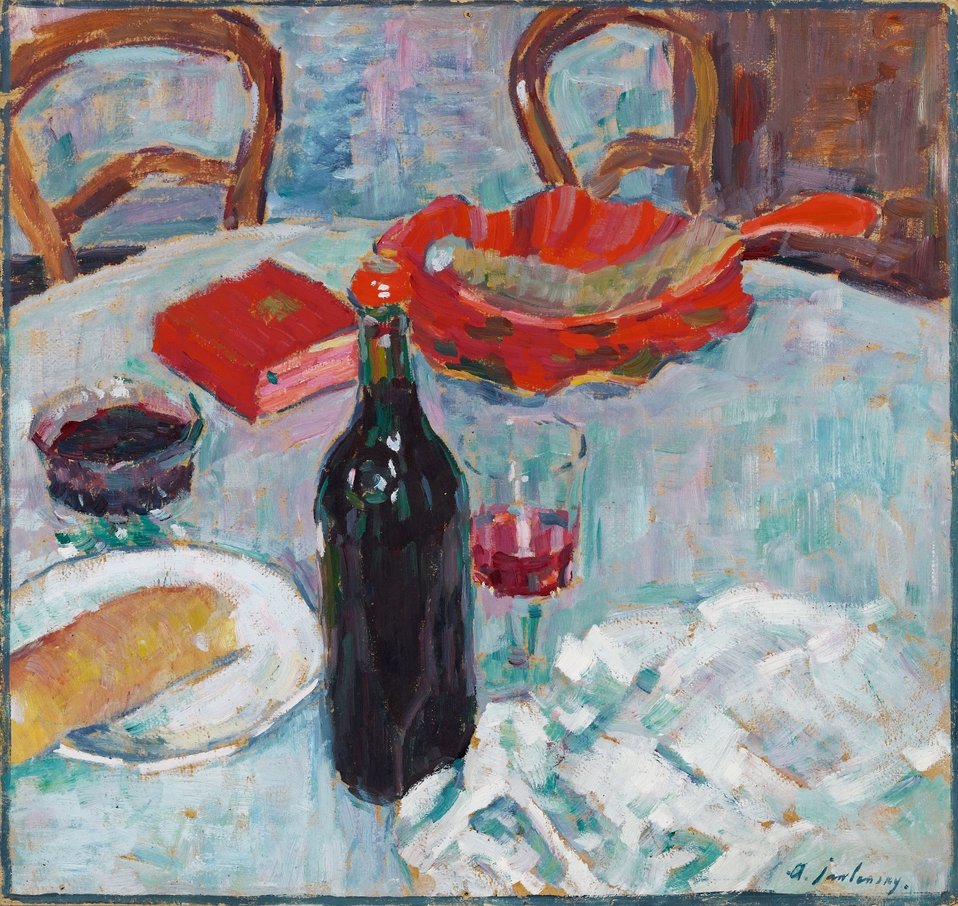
Stilleben mit Weinflasche, um 1904. Öl auf festem Malkarton 49,7 x 53 cm